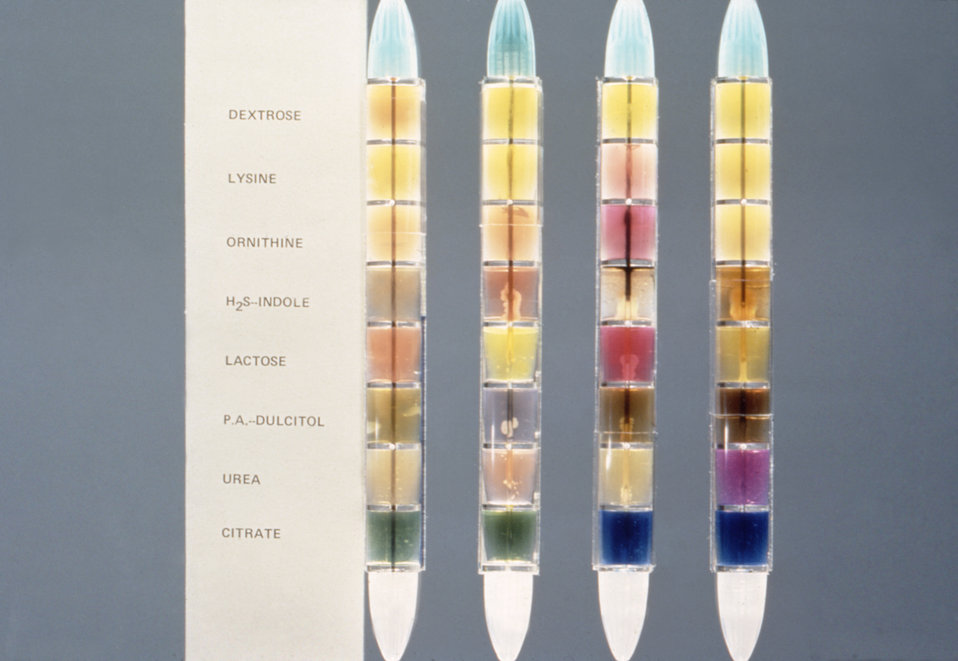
This photograph shows Enterotube� reactions that were part of an enteric pathogen biochemical laboratory study.